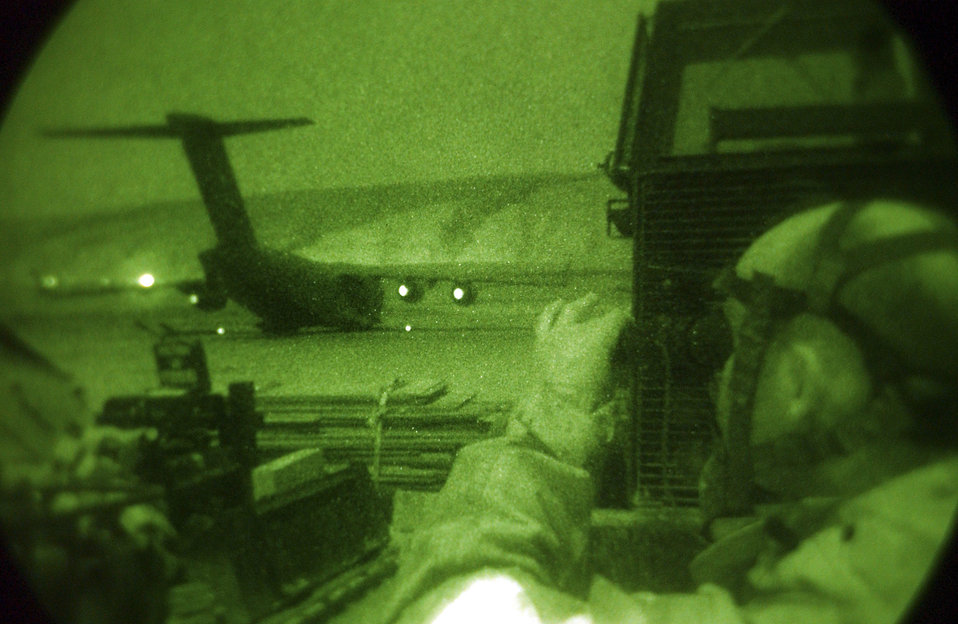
Wind blast

OPERATION IRAQI FREEDOM -- Staff Sgt. Brian Munn takes cover behind a forklift April 12 as a C-17 Globemaster III taxis toward the runway at Bashur Airfield in northern Iraq. Most of the work at this airlift hub takes place at night. Each time a cargo jet leaves the ramp, it kicks up a swirling cloud of dust.